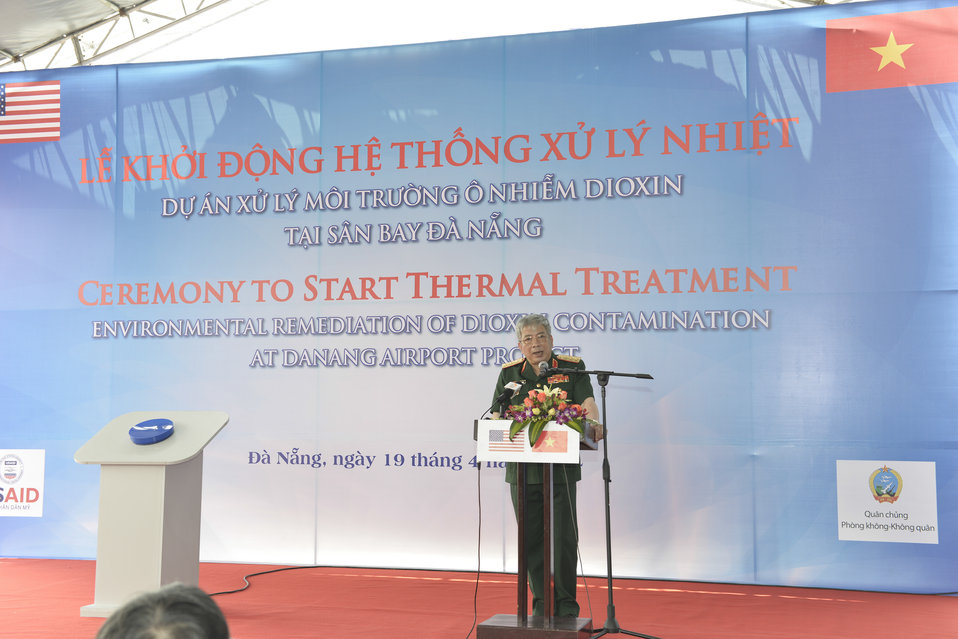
Senior Lieutenant General Nguyen Chi Vinh, Vietnam’s Vice Minister of National Defense, speaks at the ceremony to turn on treatment system at Danang Airport

Danang, April 19, 2014.